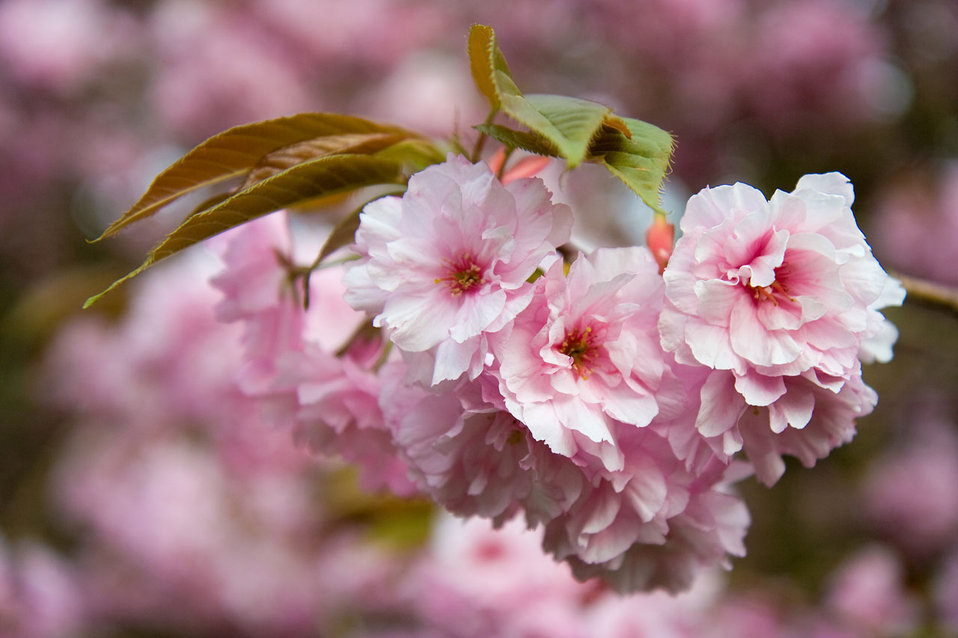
Sakura

Japanese flowering cherry in blossom.